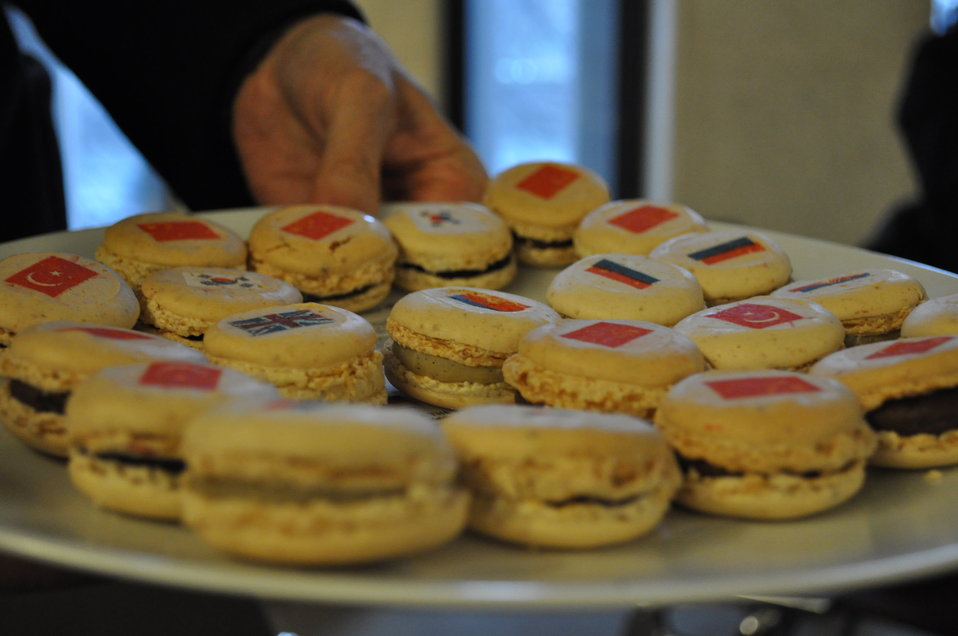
G-20 Meeting of Finance Ministers and Central Bank Governors in Paris, 02/19/2011

France treated each country to a plate full of G-20 macaroons.